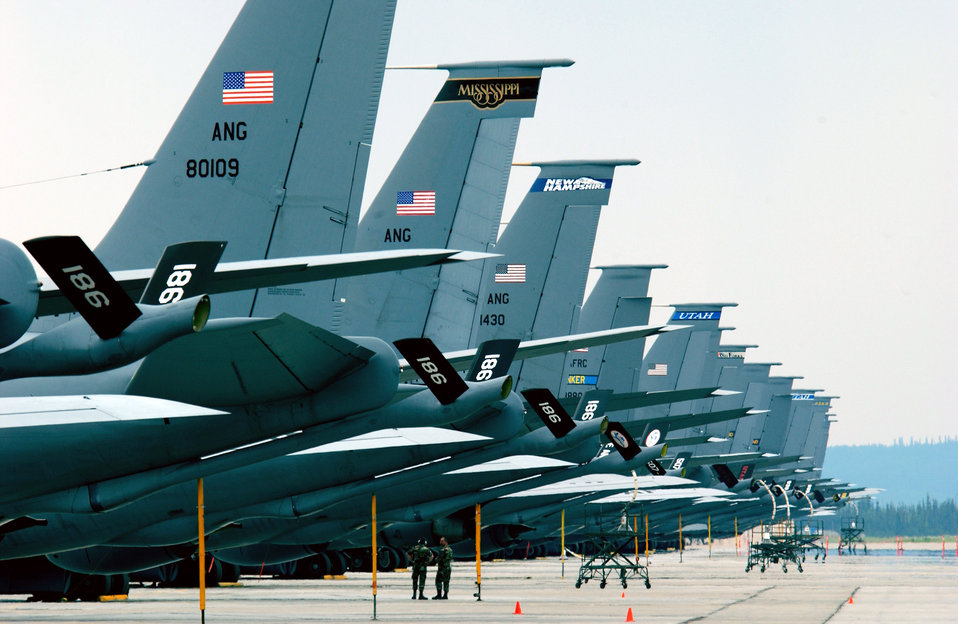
Tail markings from various KC-135 Stratotanker units are displayed at Eielson Air Force Base, Alaska, on Monday, June 12, during Exercise Northern Edge, a joint training exercise.